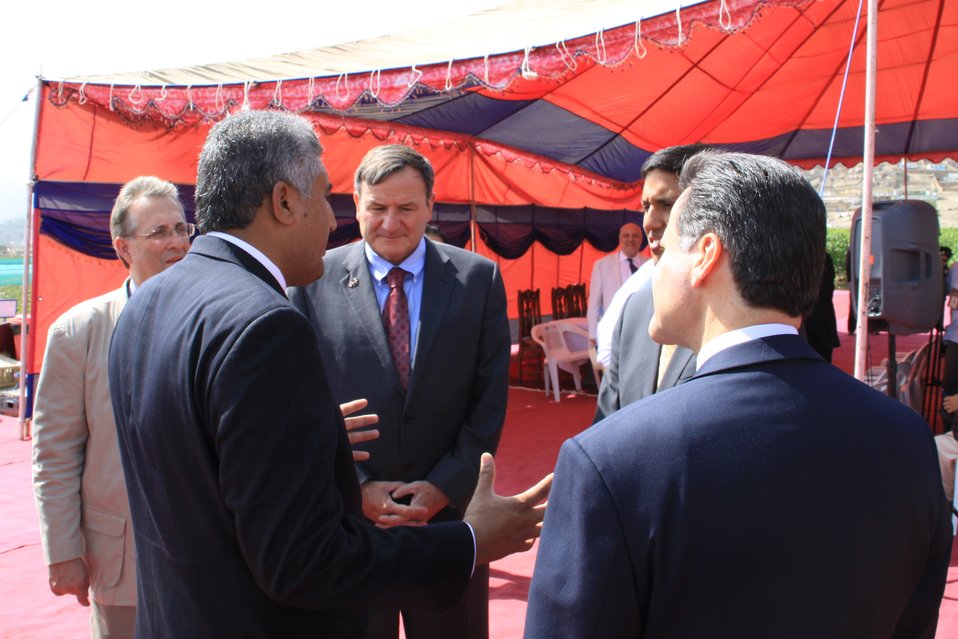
Badam Bagh Farm